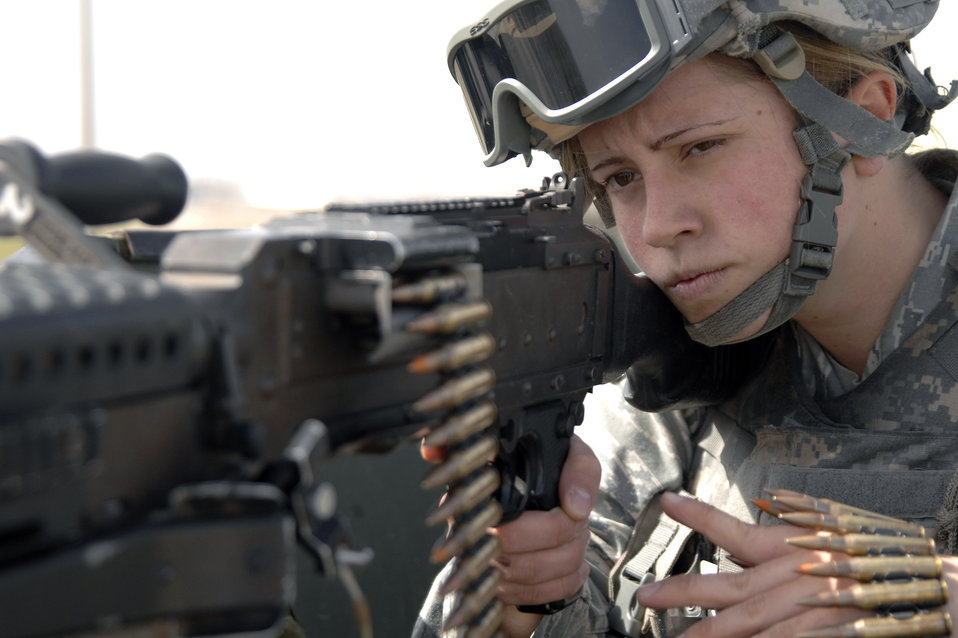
Incirlik officials celebrate Women's History Month

Airman Samantha Allred peers down the barrel of a M240B machine gun while working patrol on the flightline March 9 at Incirlik Air Base, Turkey. Airman Allred, with her fellow 39th Security Forces Squadron personnel, is responsible for providing security for the U.S. Air Forces in Europe's largest weapon's storage area. Women's History Month is celebrated throughout March to highlight American women of the past, present and future, and their accomplishments throughout the years.